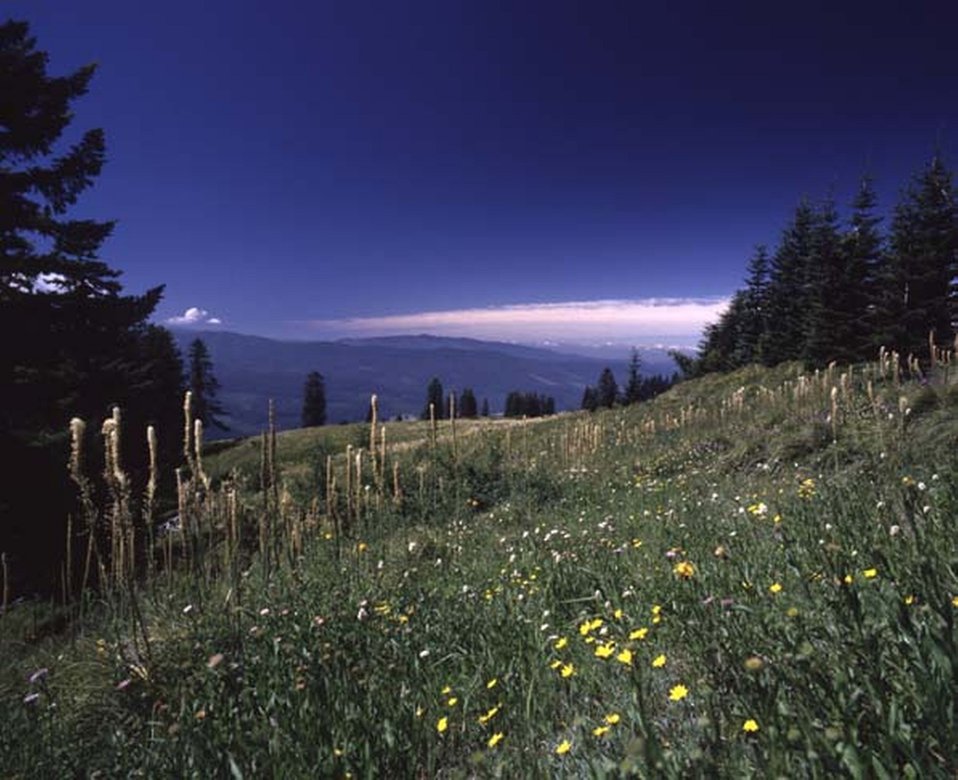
Scenic view of Mt. Horeb meadow.